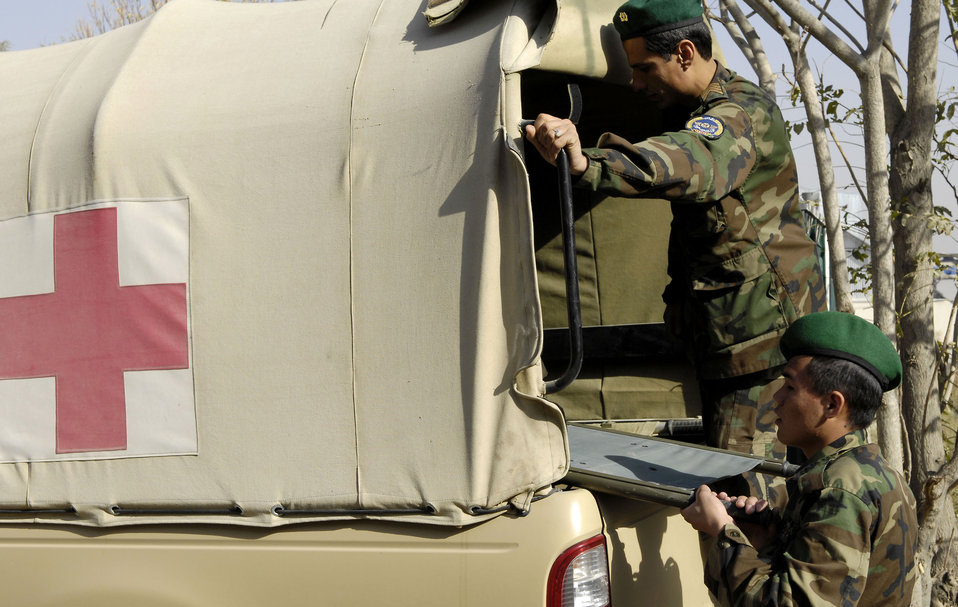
Airmen help Afghans stand up flight medicine clinic

Two Afghan national army air corps medical technicians load a litter into the back of a medical vehicle Oct. 20 at Kabul International Airport, Afghanistan. The litter was used during a training exercise in which a patient was floor loaded onto an AN-32 cargo plane. The training keeps the medical staff here proficient in the skills needed to do their jobs.